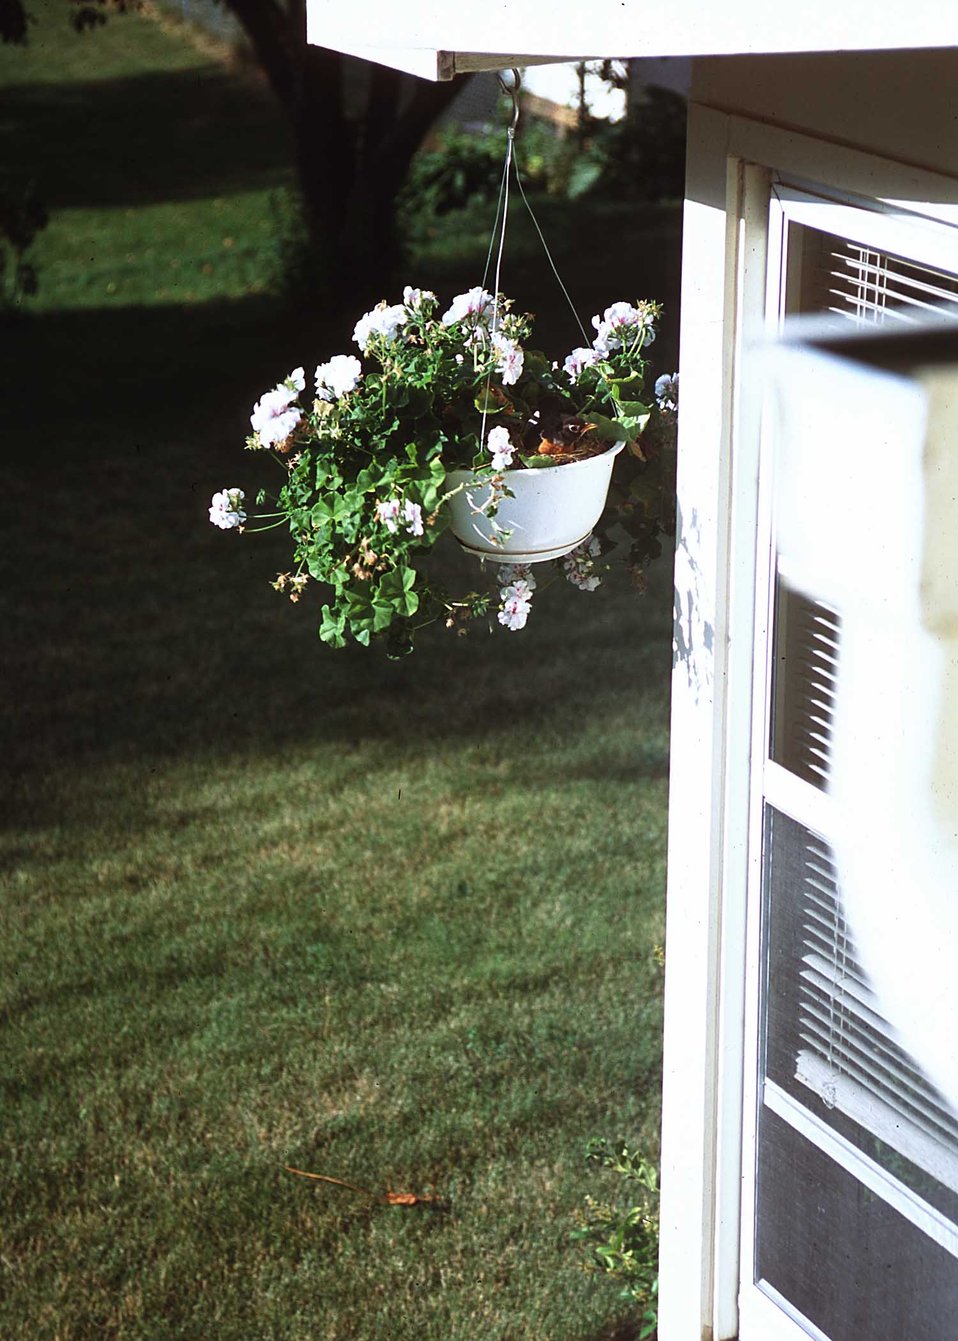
A robin made a nest and hatched babies in a hanging basket of impatiens flowers in a suburban back yard.